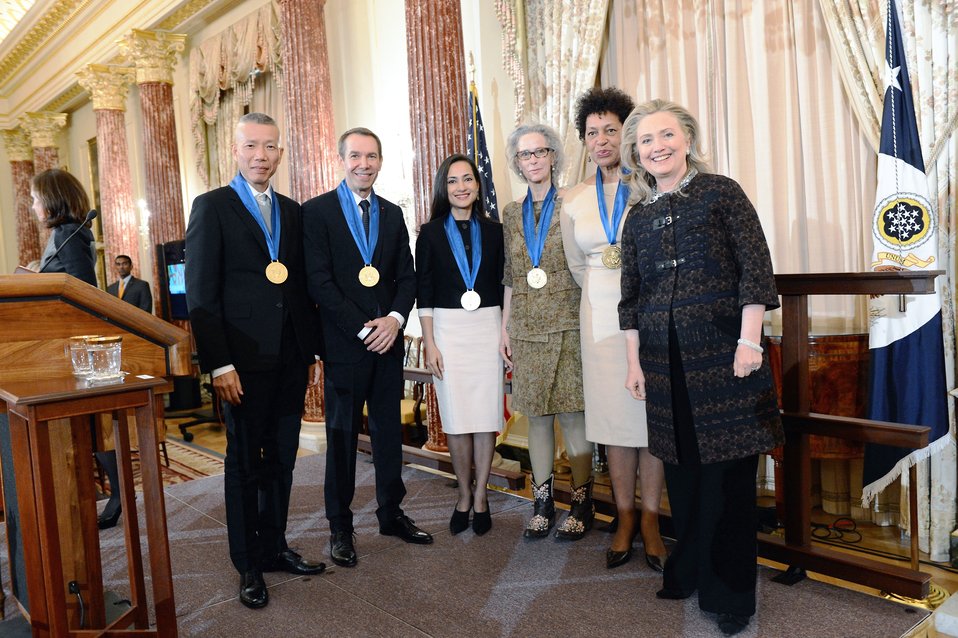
Secretary Clinton at the Art in Embassies 50th Anniversary Celebration

U.S. Secretary of State Hillary Rodham Clinton poses for a photo at the Art in Embassies 50th Anniversary Luncheon at the U.S. Department of State in Washington, D.C., November 30, 2012.